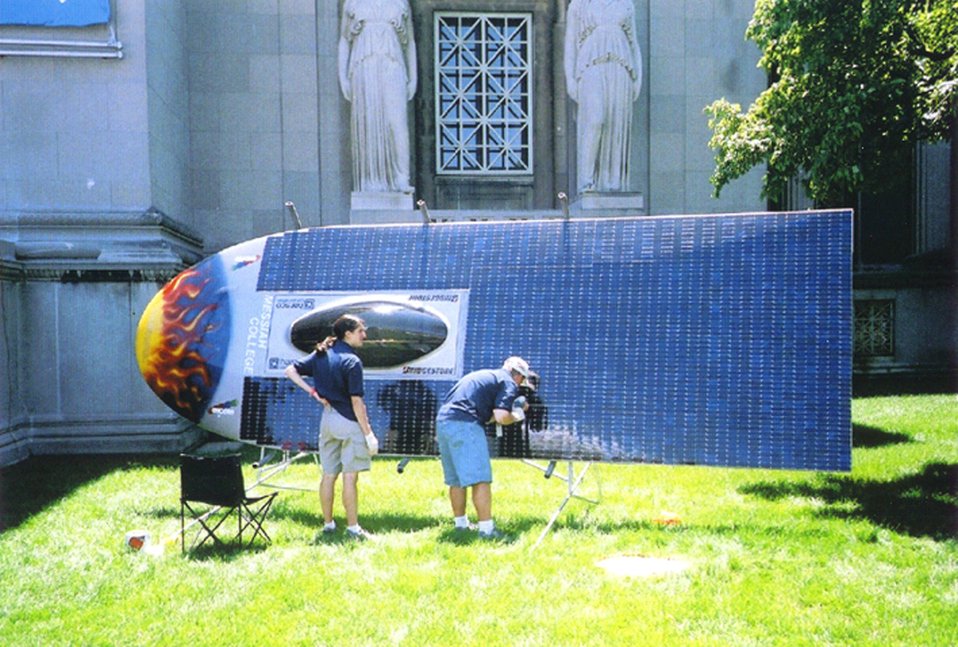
MESSIAH COLLEGE FROM PENNSYLVANIA SHOWING THEIR SOLAR ARRAY WHICH WAS THE MOST POWERFUL AT 1650 WATTS.

THE AMERICAN SOLAR CHALLENGE (SUNRAYCE) 2001, THE LONGEST SOLAR CAR RACE IN THE WORLD, IS A BIENNIAL EDUCATIONAL SPORTING EVENT IN WHICH UNIVERSITY TEAMS, COMPANIES, AND CLUBS FROM AROUND THE WORLD COMPETE TO BUILD AND RACE SOLAR POWERED CARS ACROSS THE UNITED STATES. THIS YEAR THE RACE BEGAN IN CHICAGO, ILLINOIS ON JULY 15, 2001 AND WAS COMPLETED ON JULY 25, 2001 IN CLAREMONT, CALIFORNIA, TRAVELING ALL ALONG OLD ROUTE 66.